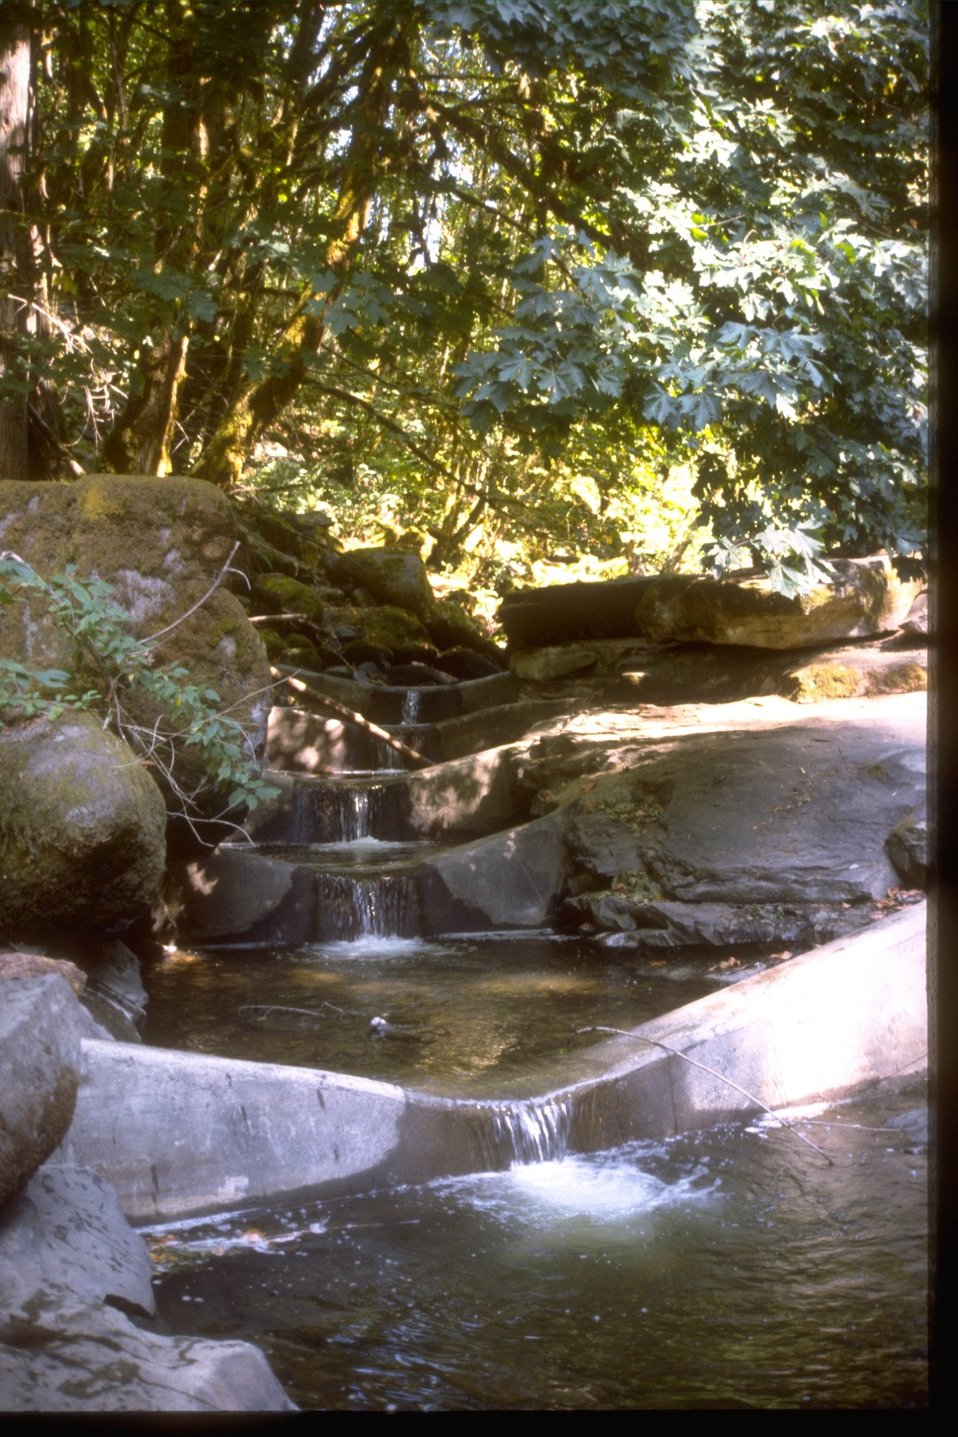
Fish passage at Lake Creek.